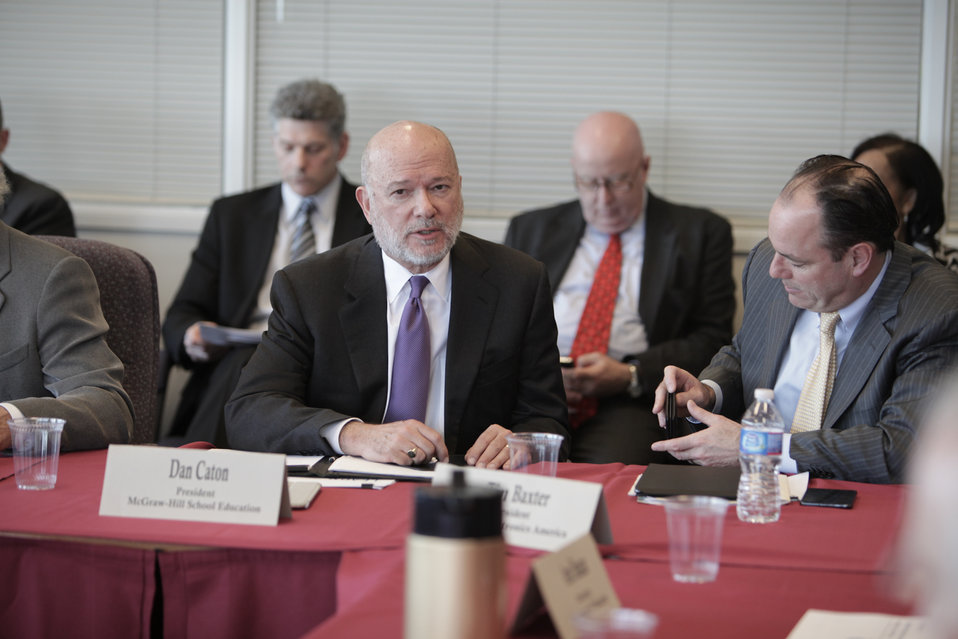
FCC Chairman Host Leaders From the Digital Education Ecosystem

President of McGraw-Hill School Education, Dan Caton and CEO of Samsung Electronics, Tim Baxter at the FCC Chairman's event at FCC's HQ in Washington, DC on March 29, 2012.